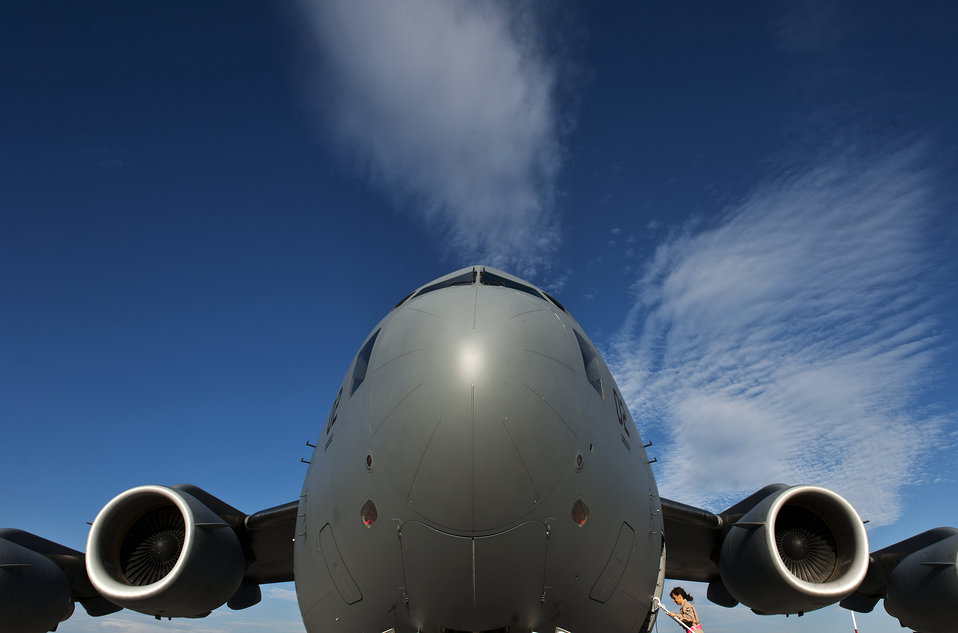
Papa AB, Hungary

Sitkei Adrienn, a diplomatic clearance specialist with the Hungarian Air Force, boards a C-17 Globemaster III before a Heavy Airlift Wing mission to the Netherlands. HAW is the operational unit of the Strategic Airlift Capability (SAC) program. SAC is a multinational consortium, designed to fulfill the strategic airlift requirements of the participating nations. It consists of ten NATO nations Bulgaria, Estonia, Hungary, Lithuania, the Netherlands, Norway, Poland, Romania, Slovenia and USA and two Partnership for Peace nations, Sweden and Finland. SACÕs operational unit HAW is a multinational unit and its Airmen come from the participating nations of the SAC program.